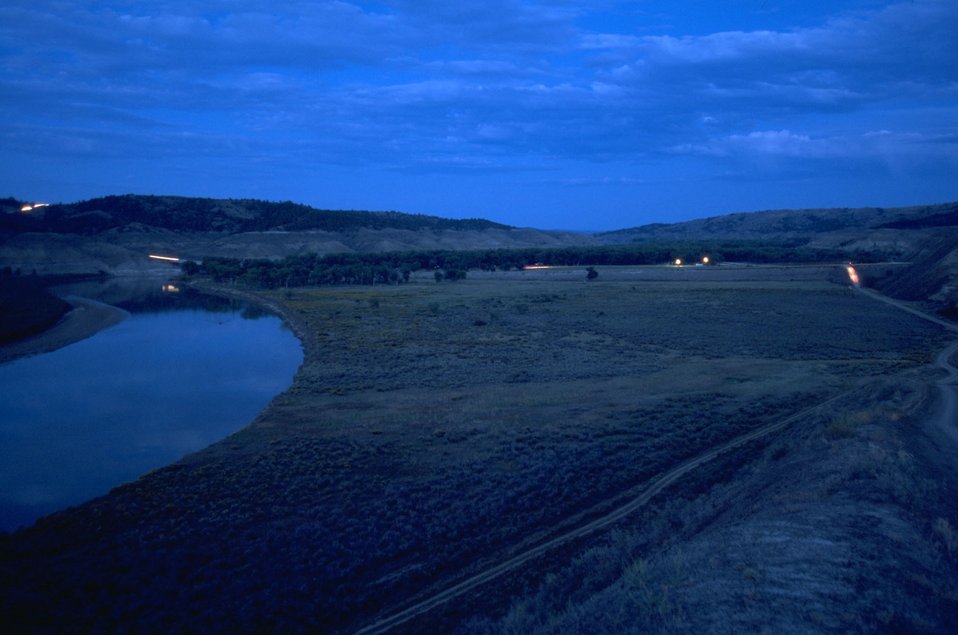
Sunset at Coal Banks Landing